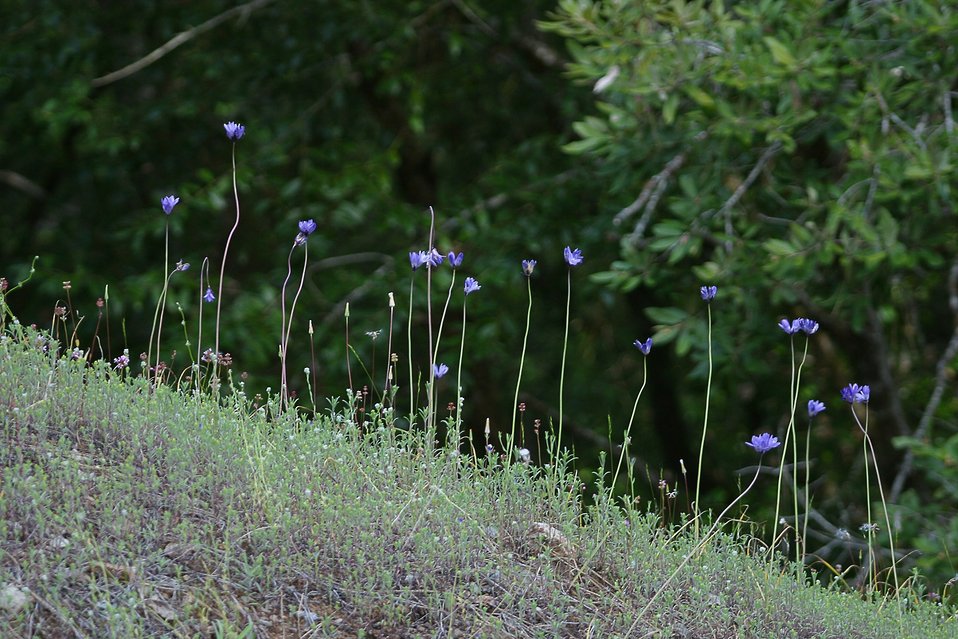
Wild section of the Rogue River from Grave Creek to Foster Bar. 3100 cfs at Grants Pass and 5300 at Agness.